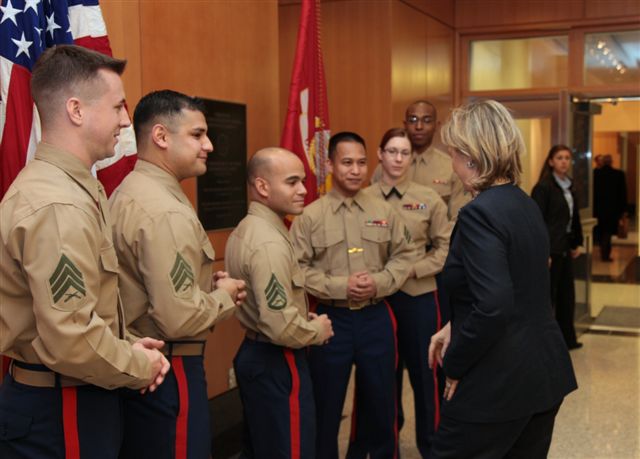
Secretary Clinton Meets With U.S. Marines

U.S. Secretary of State Hillary Rodham Clinton meets with U.S. Marines at the U.S. Embassy Astana in Astana, Kazakhstan, on December 1, 2010.